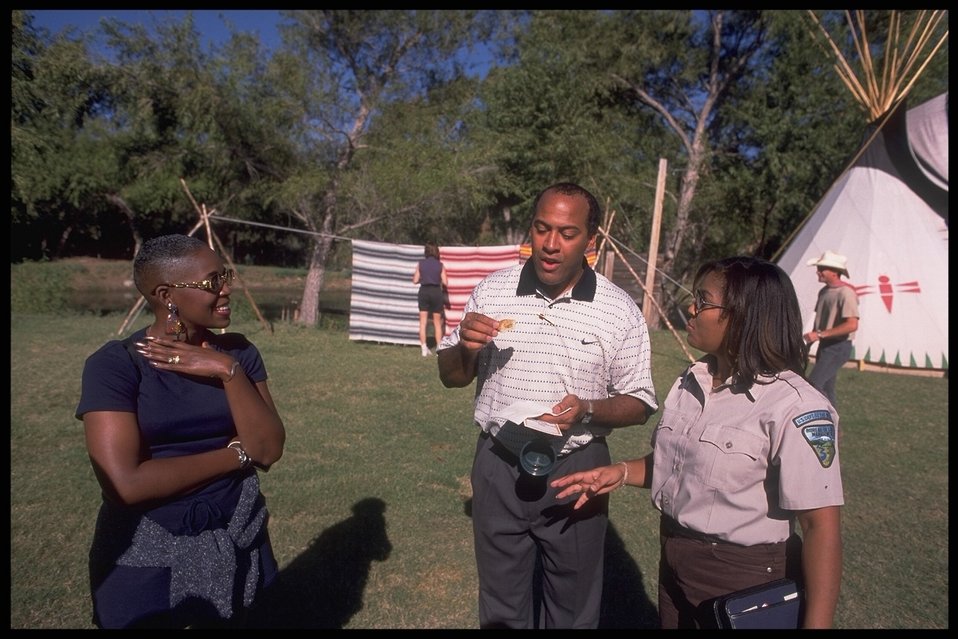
ROAR on Saturday tour, kicked off the Multi-Cultural Tourism Program to celebrate Hispanic Heritage Month and National Indian Recognition Week. Program leaders of the Rediscover Our American Roots discuss the summit activities at the Bumble Bee Ranch